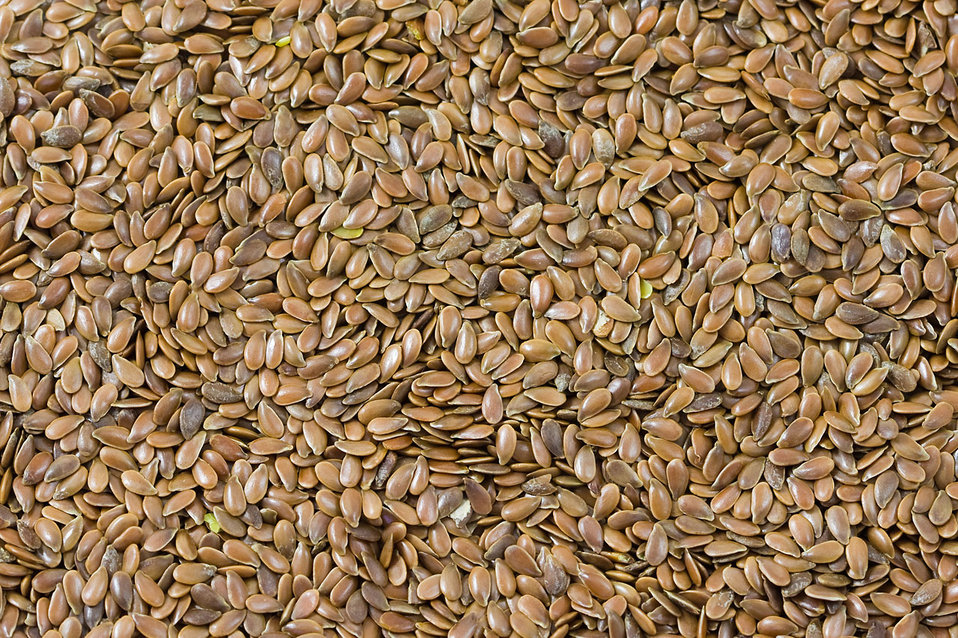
Linen seeds wallpaper.